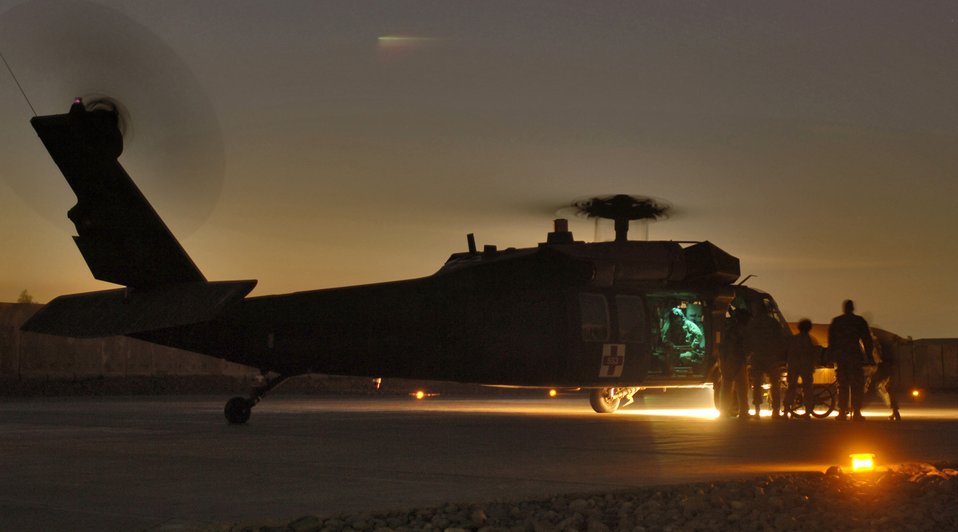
Joint care in action

BALAD AIR BASE, Iraq (AFPN) -- An Army air evacuation Blackhawk Helicopter UH-60 is met by Air Force and Army medics at the Air Force Theater Hospital here Jan. 29. The hospital provides Level 1 trauma and specialized medical care throughout the Iraqi theater. Some of their specialties include neurosurgery, orthopedics, oral maxillofacial and vascular medicine.